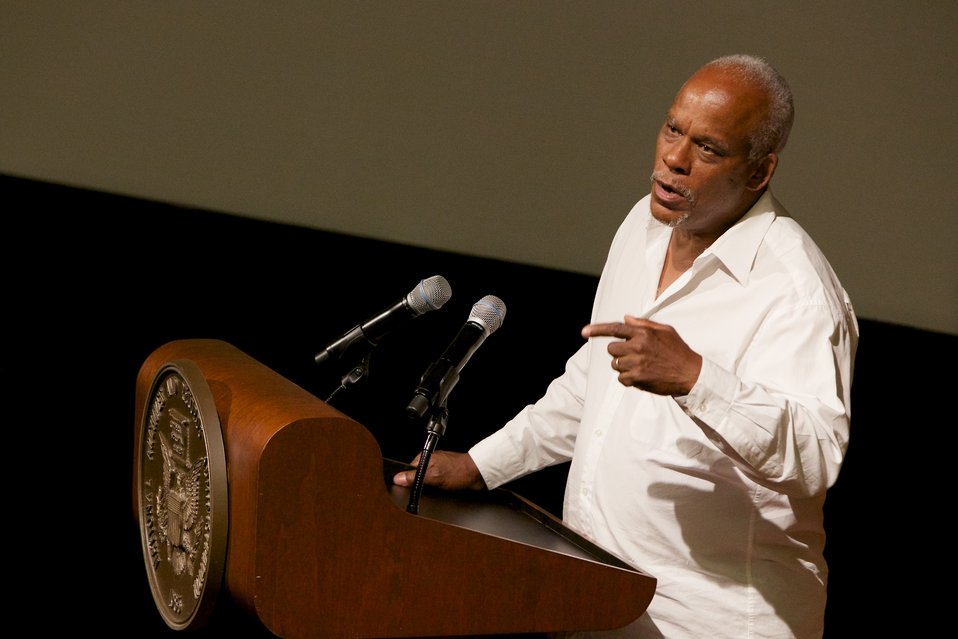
Freedom Summer